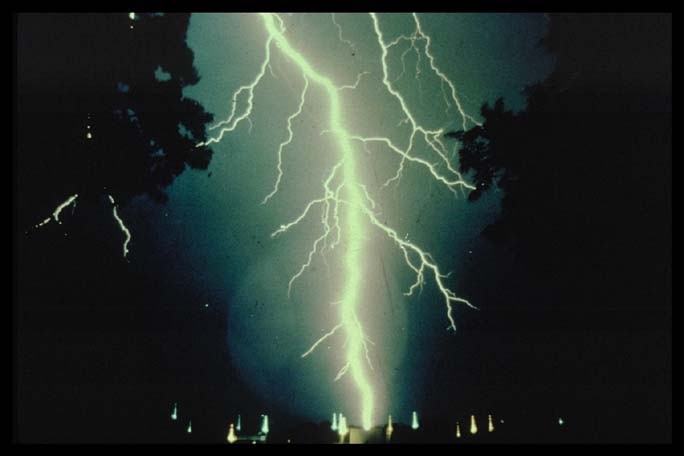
Lightning